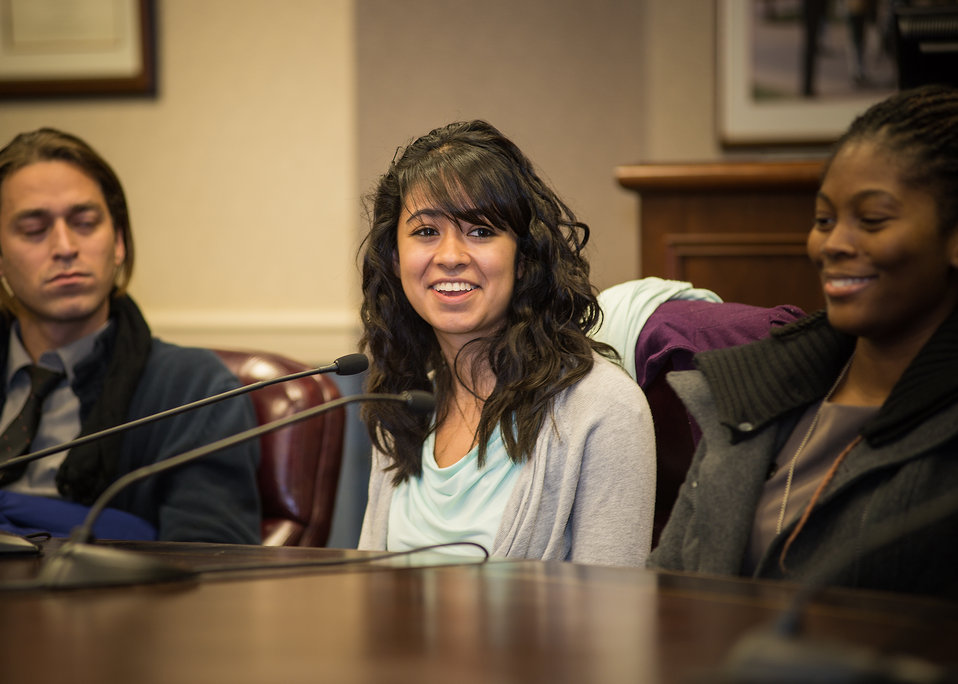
Karen Flores Garcia, a student at American University, had the opportunity to ask Deputy Secretary Krysta Harden questions during a meeting with the HACU Interns at USDA for the Fall 2013 session. The USDA/HACU National Internship Program is a partnership between the USDA and HACU that provides an excellent opportunity for the Department to identify highly qualified candidates for future employment Tue. December 3, 2013 in Washington, D.C.